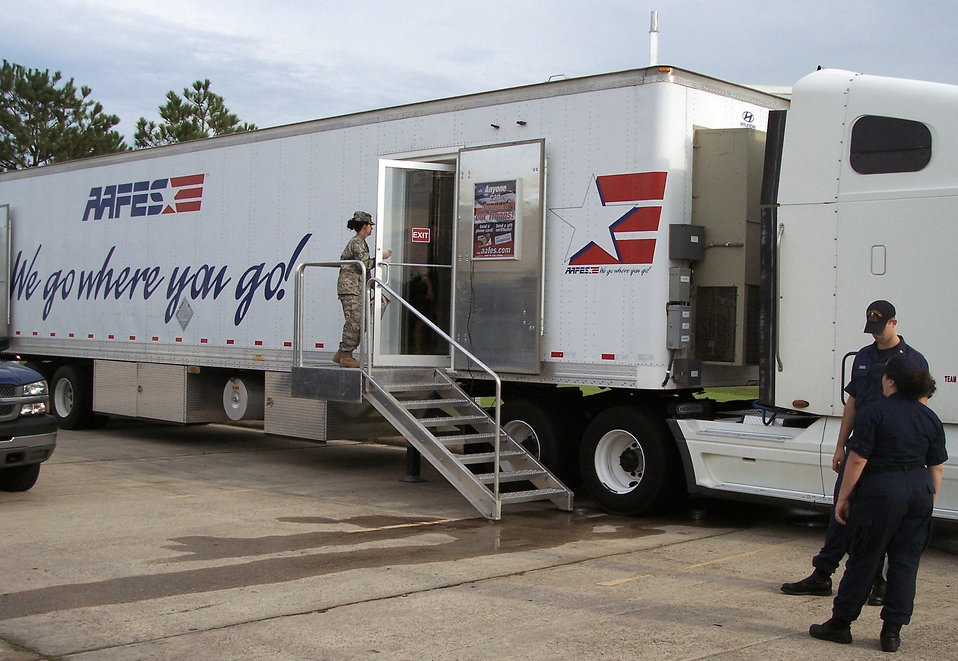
AAFES supports troops bringing relief to Ike victims

An Airman exits after shopping at the Army & Air Force Exchange Service Mobile Field Exchange at Ellington Field, Texas, Sept. 15. AAFES is providing support to service members who are providing assistance to the Houston area in the wake of Hurricane Ike. The MFE provides snacks, drinks, toiletries and ice to authorized customers and will stay at Ellington Field until the installation?s power comes back online.